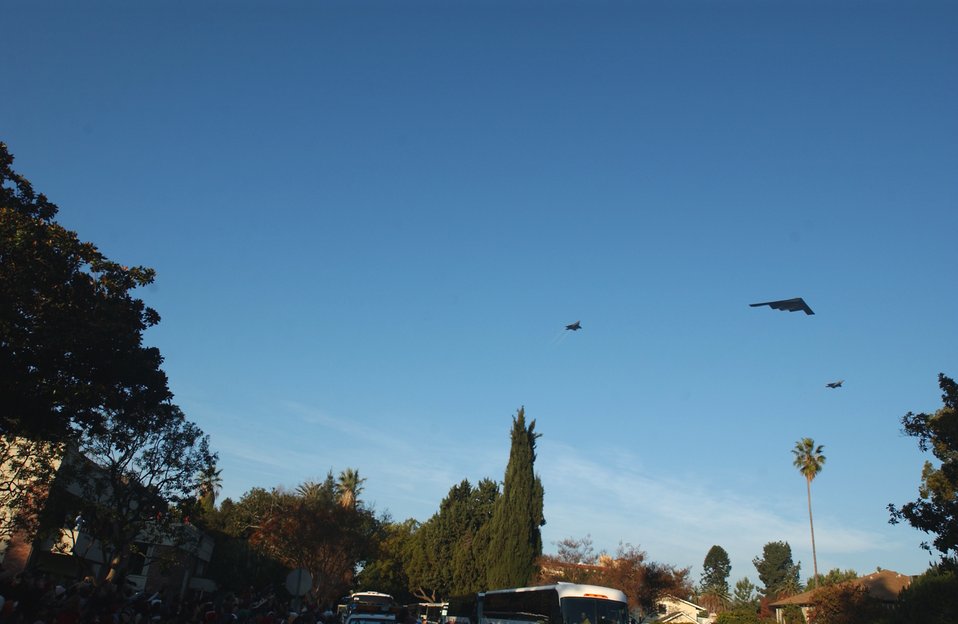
118th Rose Parade kicks off with a silent 'boom'

A B-2 Spirit and two F-22 Raptors fly over the 2007 Tournament of Roses Parade Jan. 1 in Pasadena, Calif.